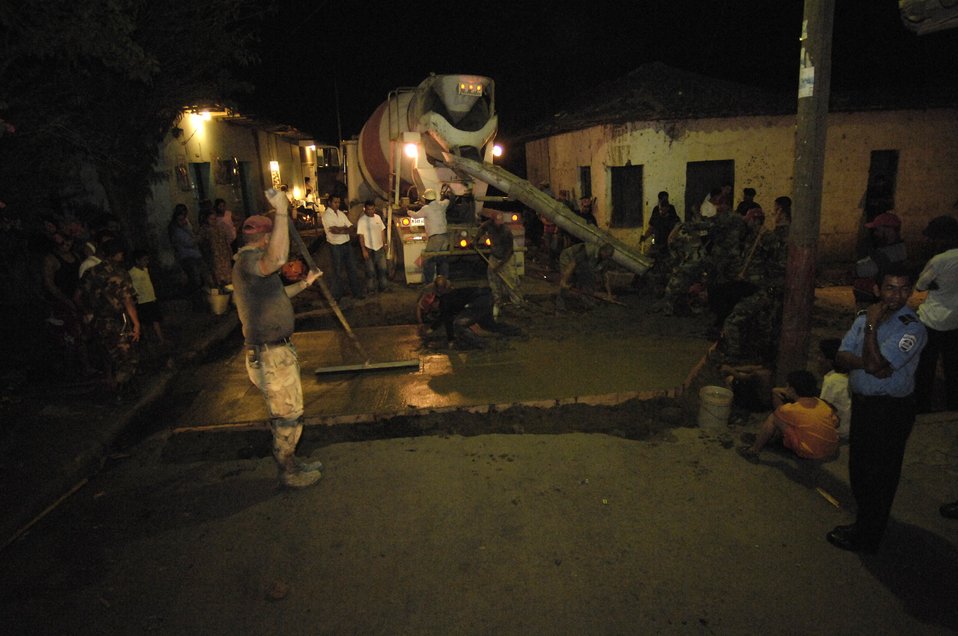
New Horizons-Nicaragua 2007

Airmen deployed with 820th Expeditionary Red Horse Squadron smooth freshly poured concrete March 2 for a new roadway in Santa Teresa, Nicaragua. The effort was part of New Horizons-Nicaragua 2007, a $7.25 million joint U.S. and Nicaraguan military humanitarian and training exercise, providing a new school, and medical clinic, as well as free health and veterinary care, giving aid and strengthening bonds between the two nations.